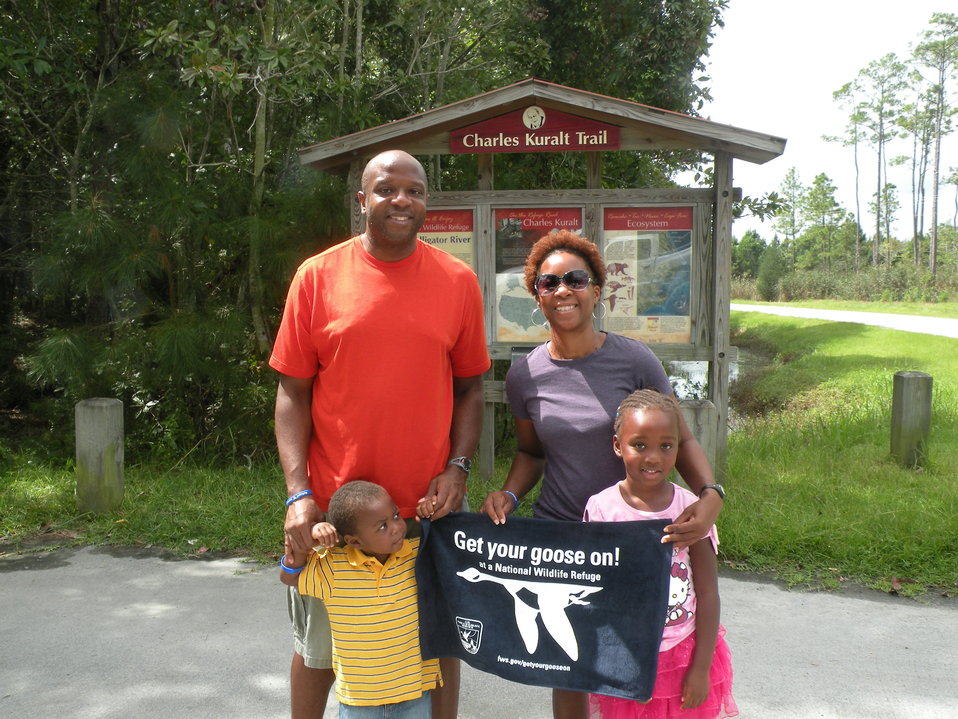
Get Your Goose On!

Visitors on the Charles Kuralt Trail at ARNWR Get Their Goose On!

Ashlyn Knight/USFWS